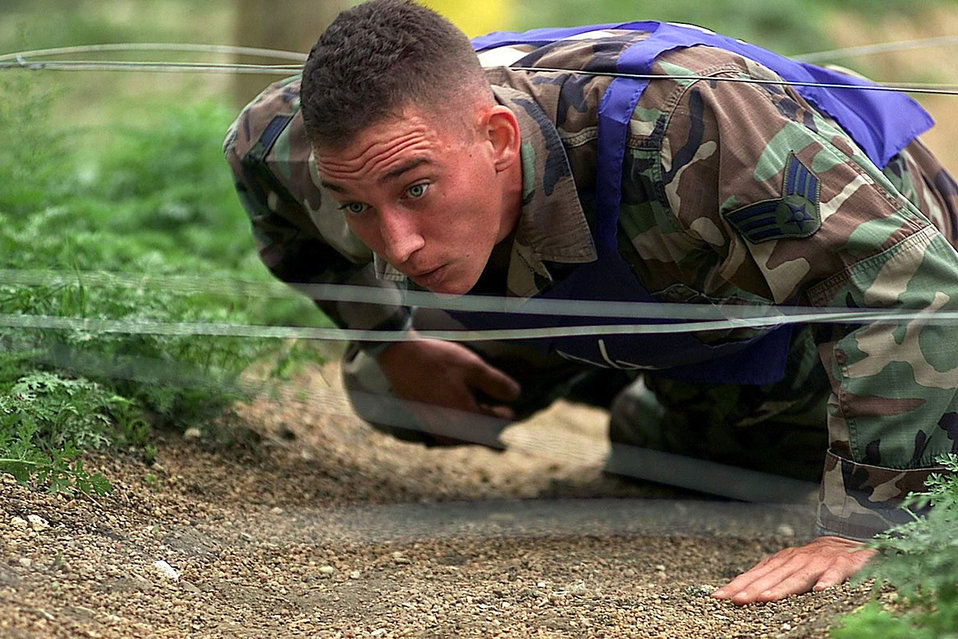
How low can you go?

LACKLAND AIR FORCE BASE, Texas -- Senior Airman Daniel Dance, Air Force Special Operations Command, draws a clean line through the low crawl obstacle of the Fitness Challenge during Defender Challenge 2000 held here Oct. 30. Defender Challenge is the annual Air Force wide competition sponsored by Air Force Security Forces. This competition showcased the talents and capabilities of 13 international Security Forces teams in seven physical fitness, base defense and policing skills.